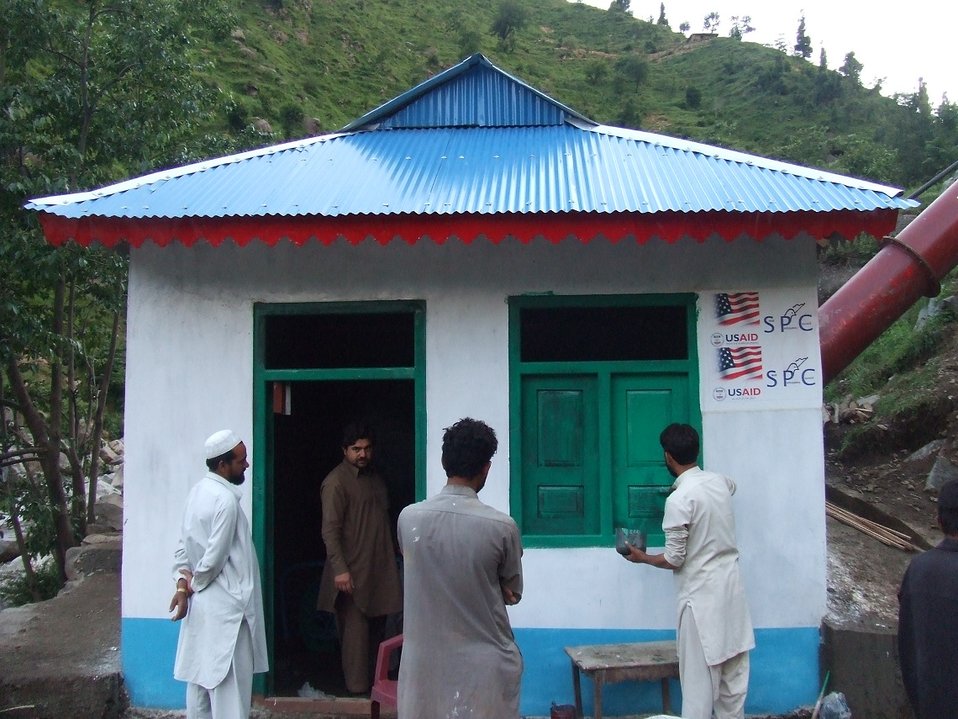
During Launch of Power Project

A new wave of energy has swept a remote village of Matta Tehsil. Children are excited, elders relieved. Electricity had lit their dark houses after over six decades of independence and connected them to the modern world.
“We can now watch cartoons on the TV just like all the other children,” said an excited child during the inauguration of a micro-hydropower station on Saturday.
The community-based power station, which will supply electricity to about 110 households in Swatai village, has been installed with the assistance of Small Grants Ambassador Fund Program of the USAID in collaboration with the Swat Participatory Council (SPC).